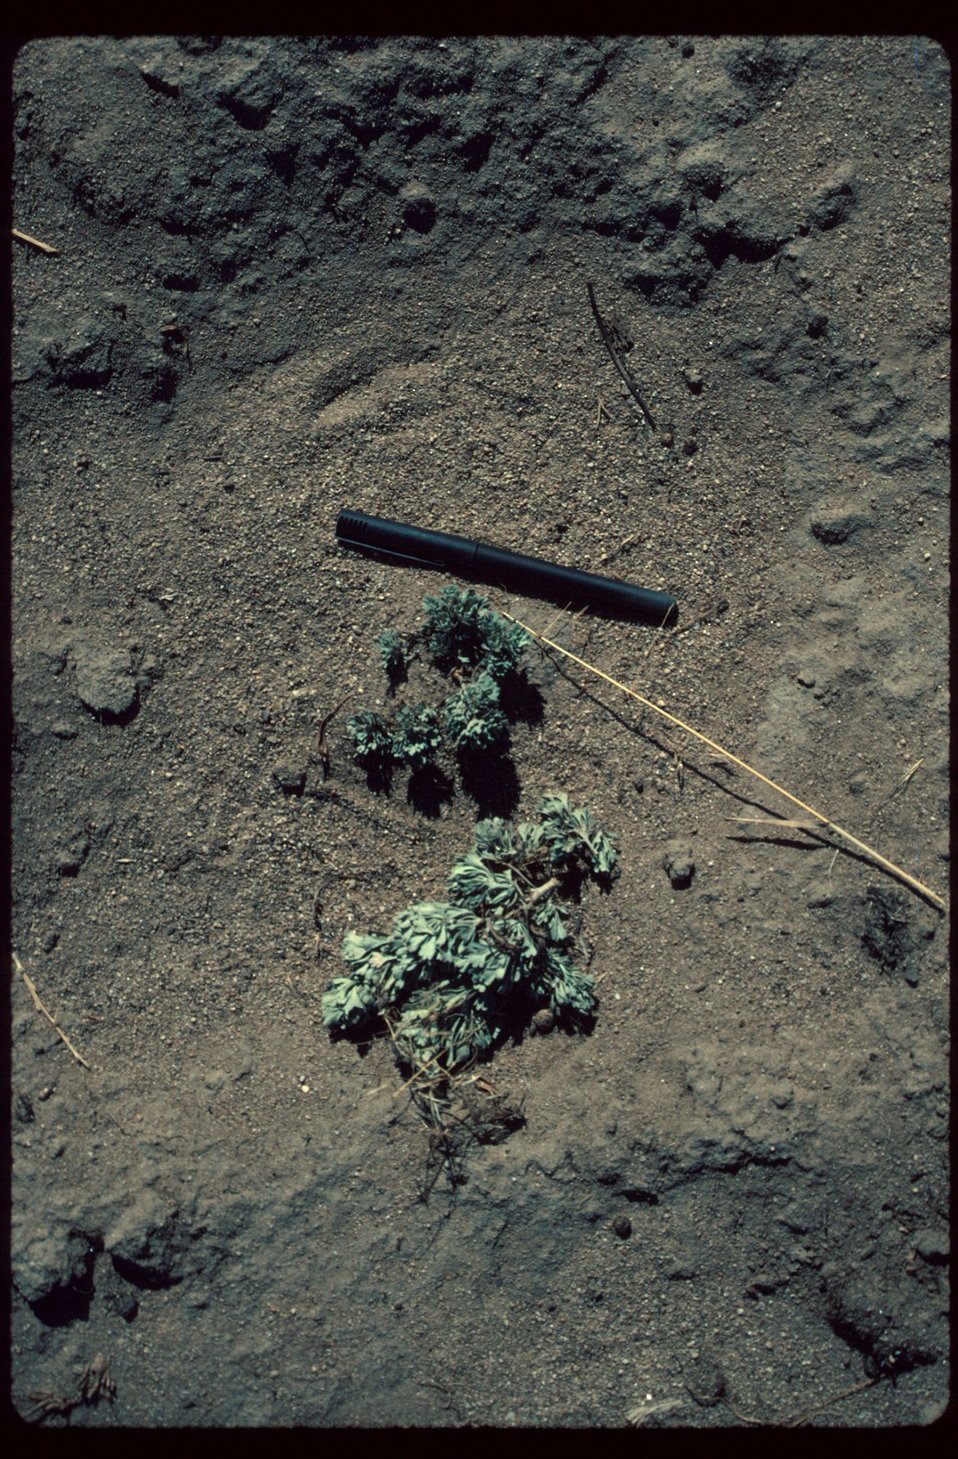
Seedling Range Restoration Project